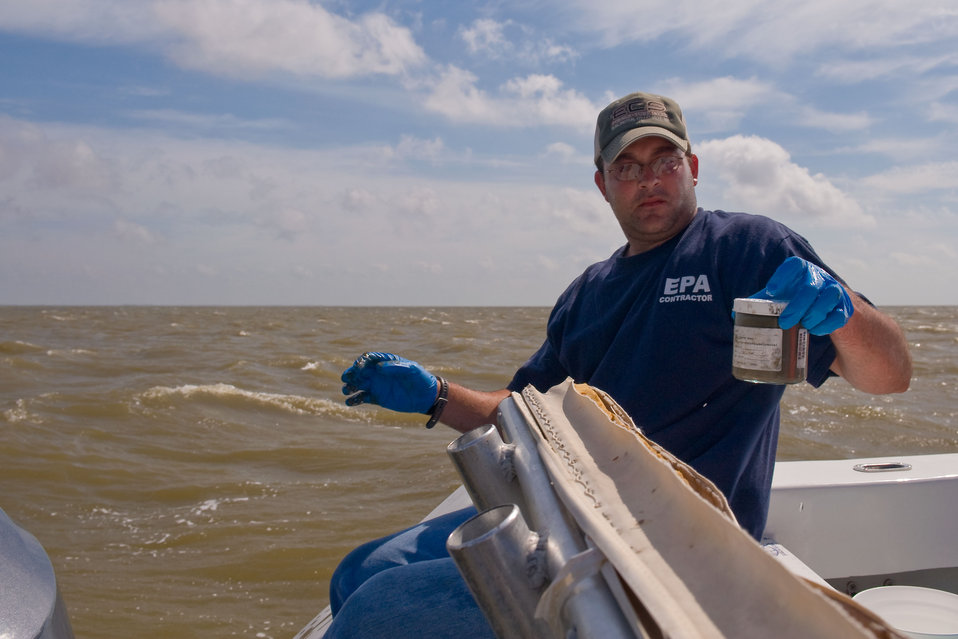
Sediment sampling in response to the BP oil spill

May 12, 2010. Sediment sampling, Jarrod Redwine, VTECH Environmental Services, EPA contractor.